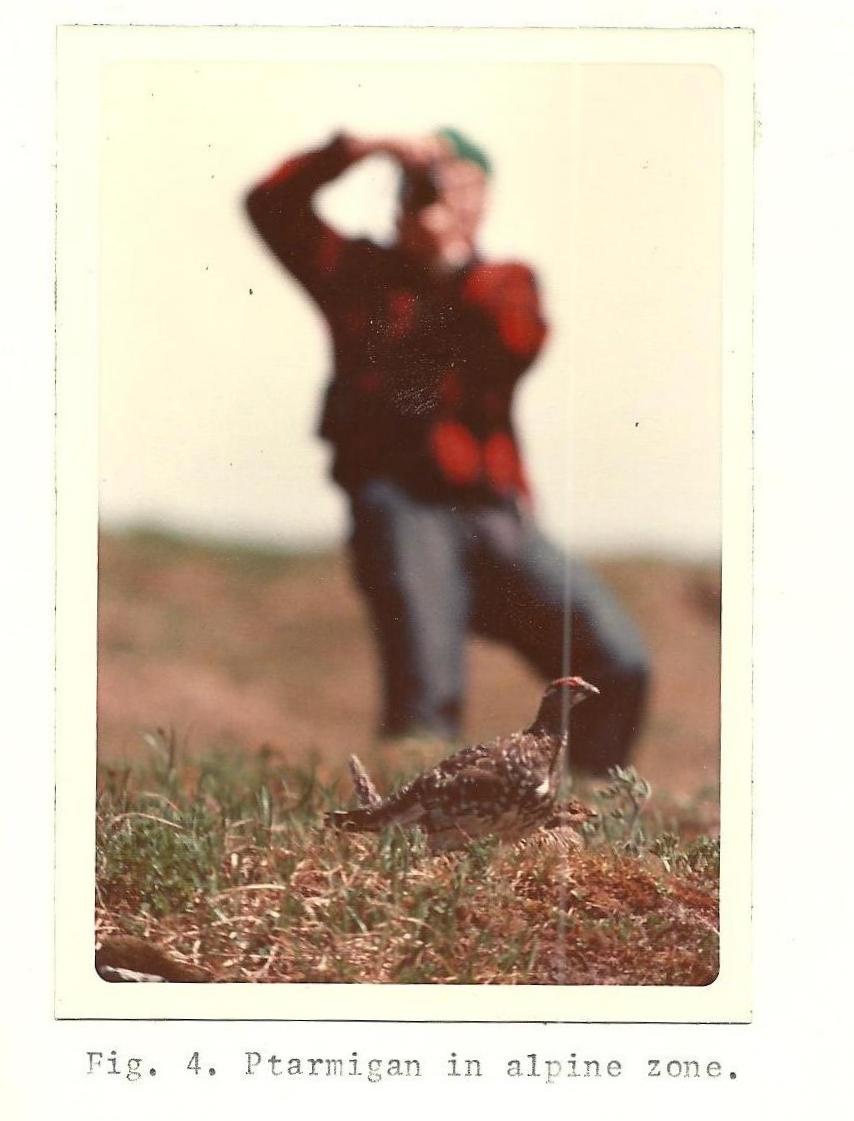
(1975) Depth of field

Credit: USFWS

Source and Contact: Kodiak National Wildlife Refuge